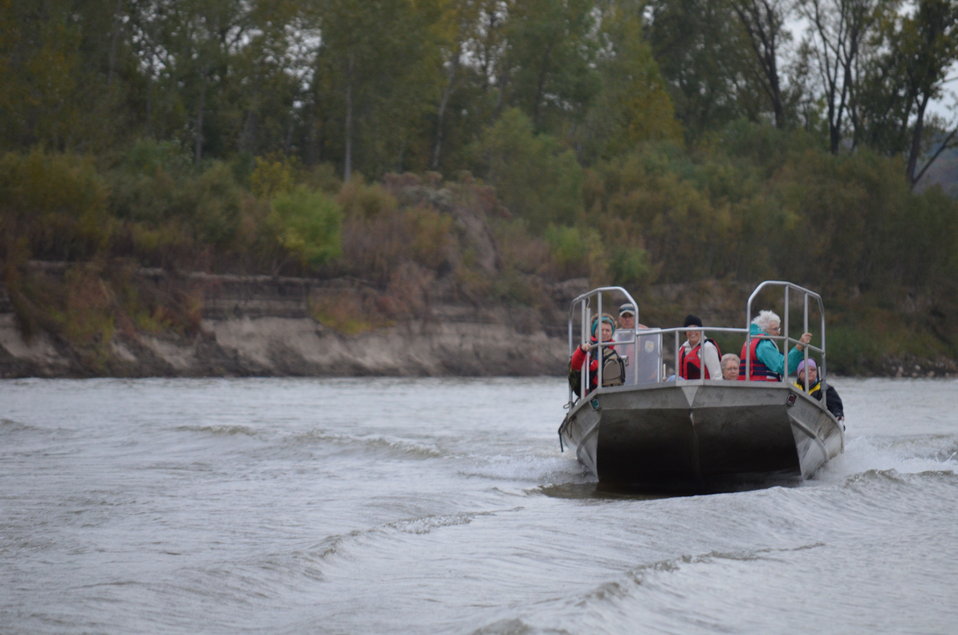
Making waves while heading back to shore. USFWS/Ashley Spratt